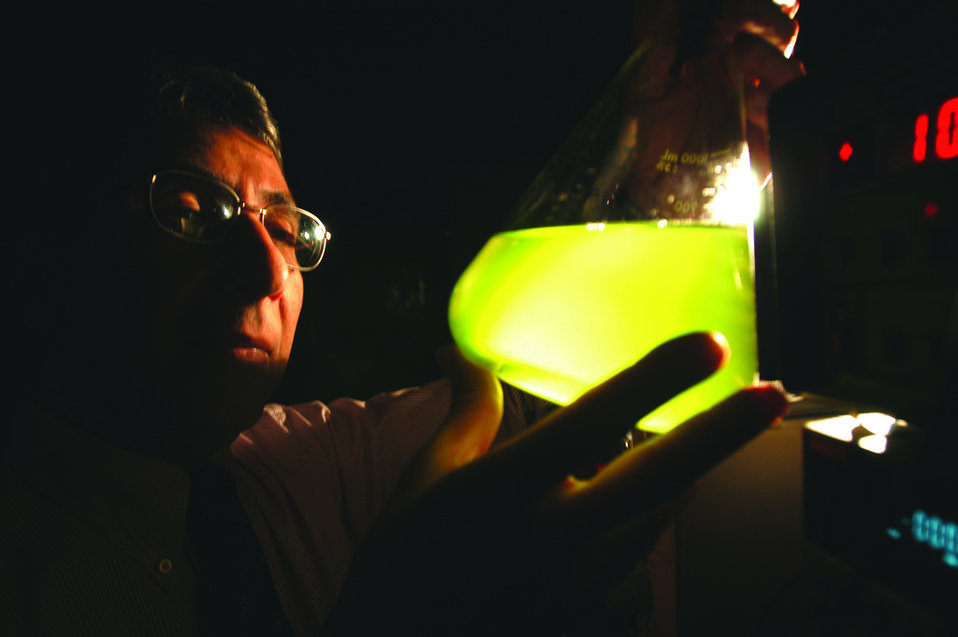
At Oak Ridge National Laboratory, a scientist has demonstrated that algae can be used as biosensors to detect the presence of toxins and chemical warfare agents in primary source drinking water.